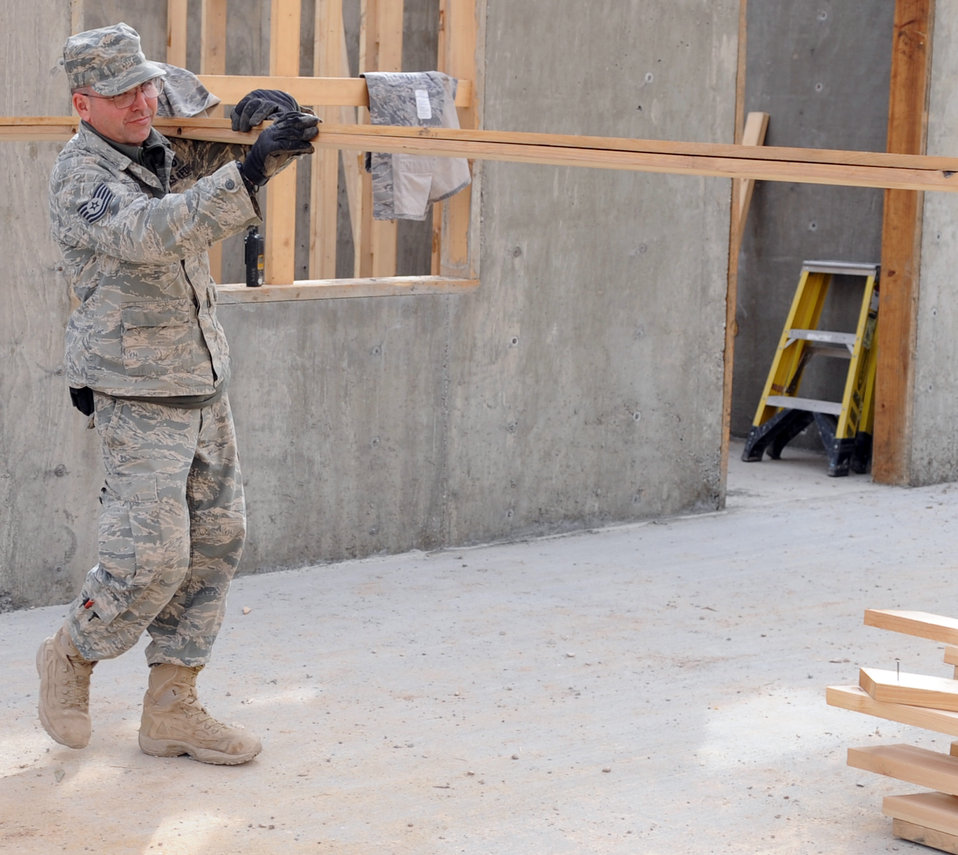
Cancer free, serving proud: Kirkuk Airman shares his story

Tech. Sgt. Mark Duran builds support beams Jan. 28, 2010 at Kirkuk Air Base, Iraq. Sergeant Duran is now six years cancer free. He is a 506th Expeditionary Civil Engineer Squadron structures technician deployed from 301st Civil Engineer Squadron Joint Reserve Field Carswell Fort Worth, Texas.